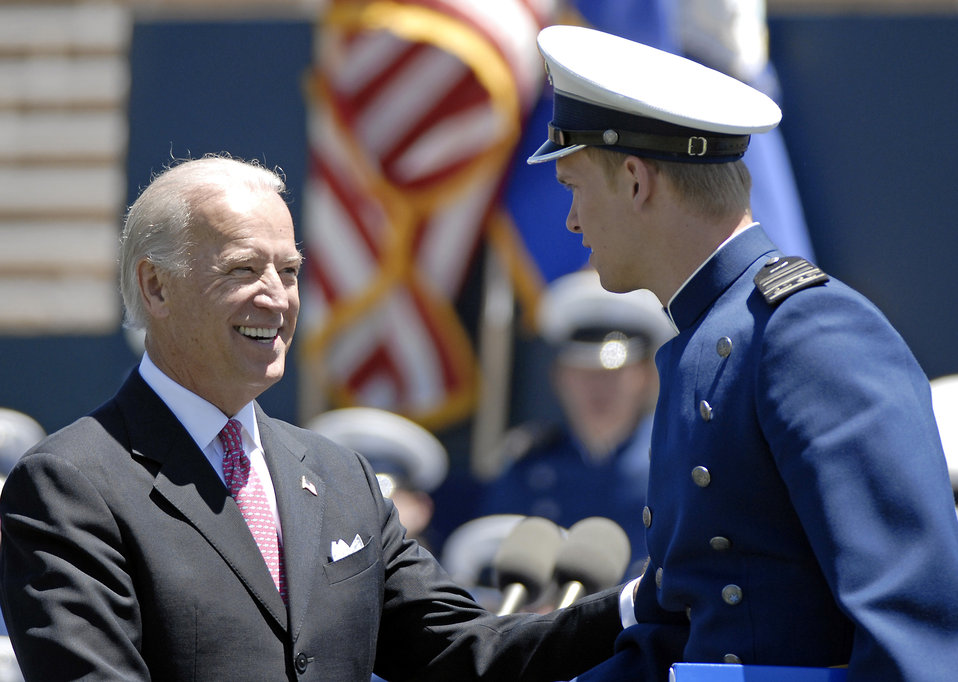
2009 U.S. Air Force Academy graduation

Vice President Joe Biden congratulates newly commissioned 2nd Lt. Matthew Holland during the U.S. Air Force Academy Class of 2009 graduation ceremony held at Falcon Stadium May 27.